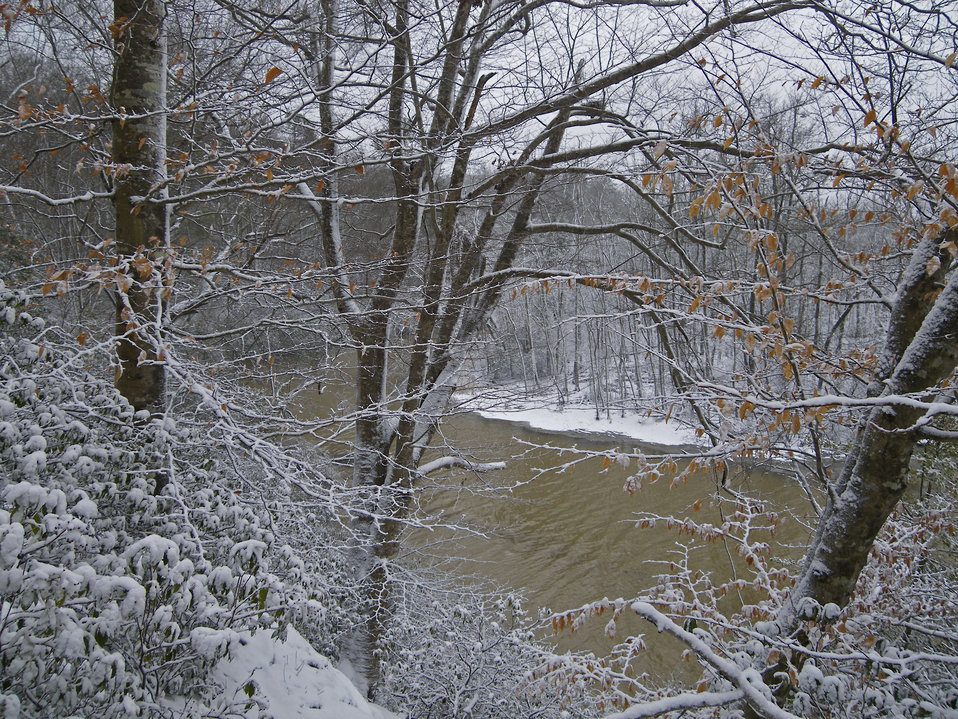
Winter

James River National Wildlife Refuge, VA.